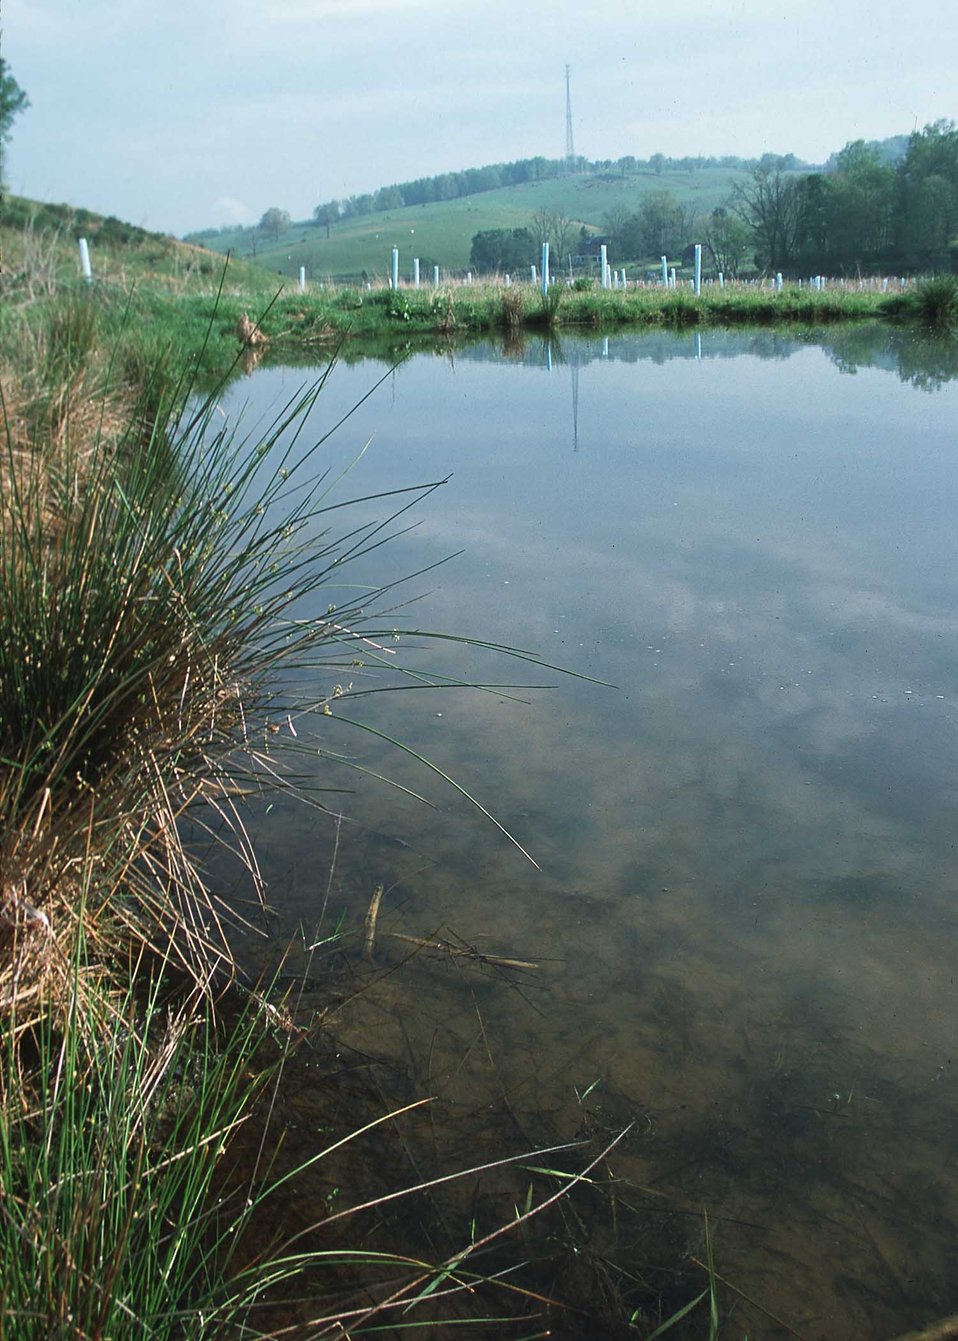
Wetland Reserve Program site showing tree planting, pond, and wetland restoration practices, Marion, Virginia.